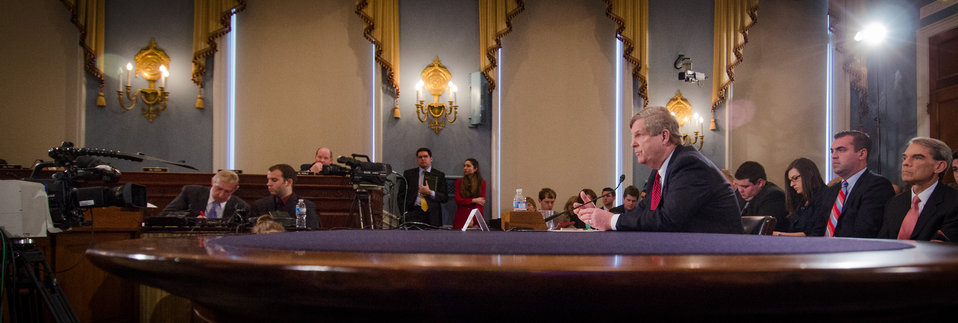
Cable news network CSPAN-3 produced a live broadcast of Agriculture Secretary Tom Vilsack testifies before the House Agriculture Committee regarding the “State of the Rural Economy“ at the Longworth Office Building in Washington, D.C. on Tuesday, Mar. 5, 2013.